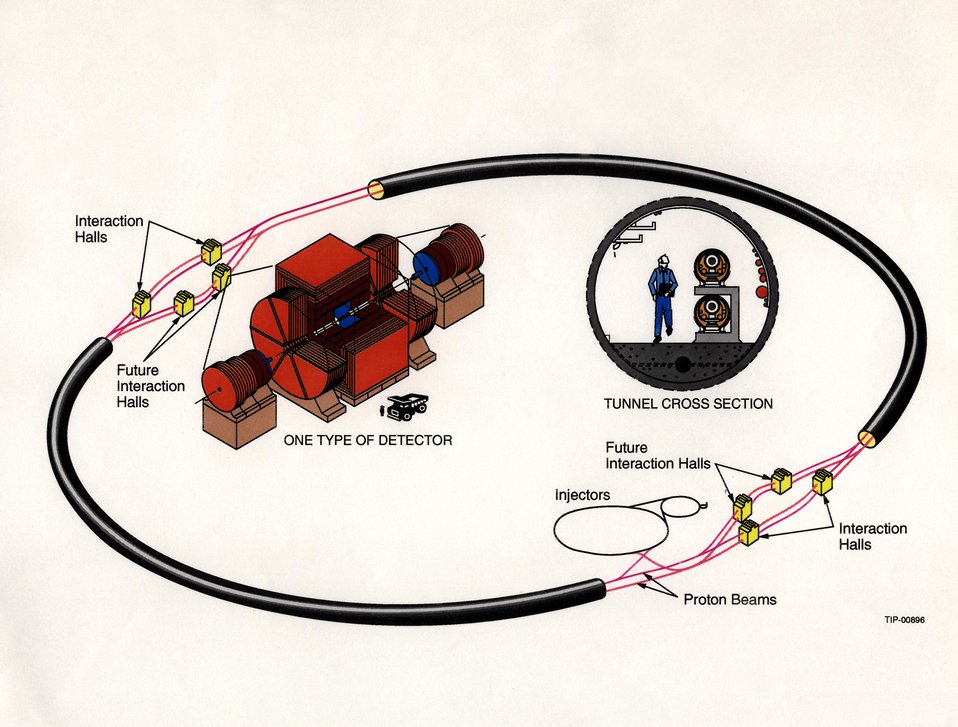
ARTIST'S CONCEPT OF SUPERCONDUCTING SUPER COLLIDER LABORATORY.

THE SSC IS UNDER CONSTRUCTION IN ELLIS COUNTY, TEXAS. IT WILL CONSIST OF A COLLIDER COMPRISING TWO RINGS OF SUPERCONDUCTING MAGNETS HOUSED UNDERGROUND IN A RACE-TRACK SHAPED TUNNEL THAT IS 14 FEET IN CROSS-SECTION AND 54 MILES IN CIRCUMFERENCE. AFTER PASSING THROUGH A CHAIN OF FOUR INJECTOR ACCELERATORS, TWO BEAMS OF PROTONS TRAVELING IN OPPOSITE DIRECTIONS WILL BE FURTHER ACCELERATED TO NEARLY THE SPEED OF LIGHT, COLLIDING AT 20 TRILLION ELECTRON VOLTS.